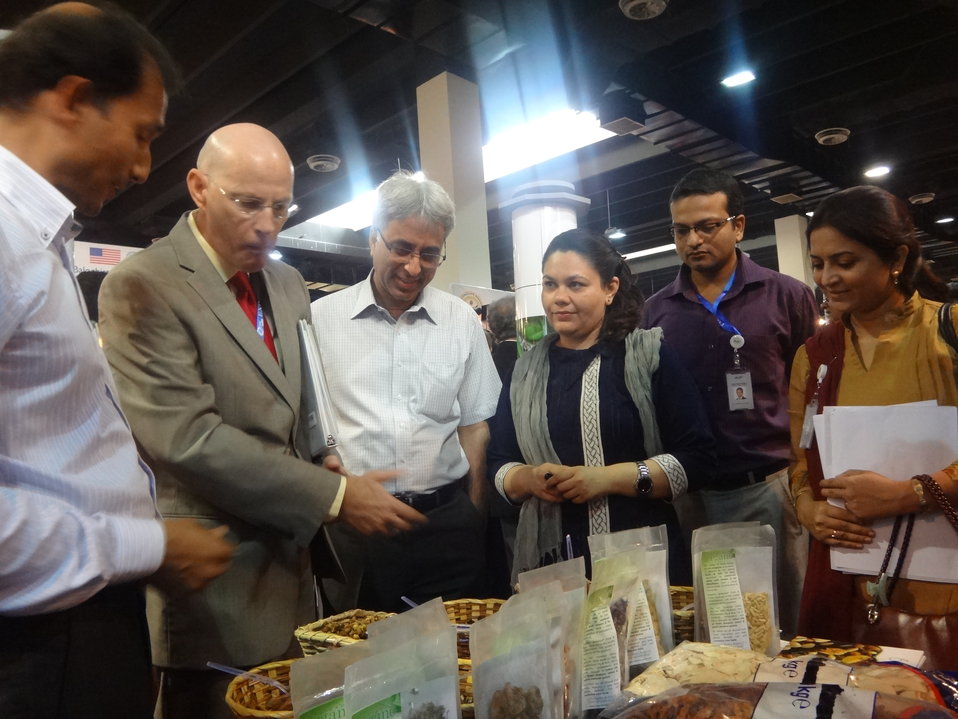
US Ambassador's visit to The Agribusiness Project at TDAP Expo, Karachi, September 27, 2013 (5)